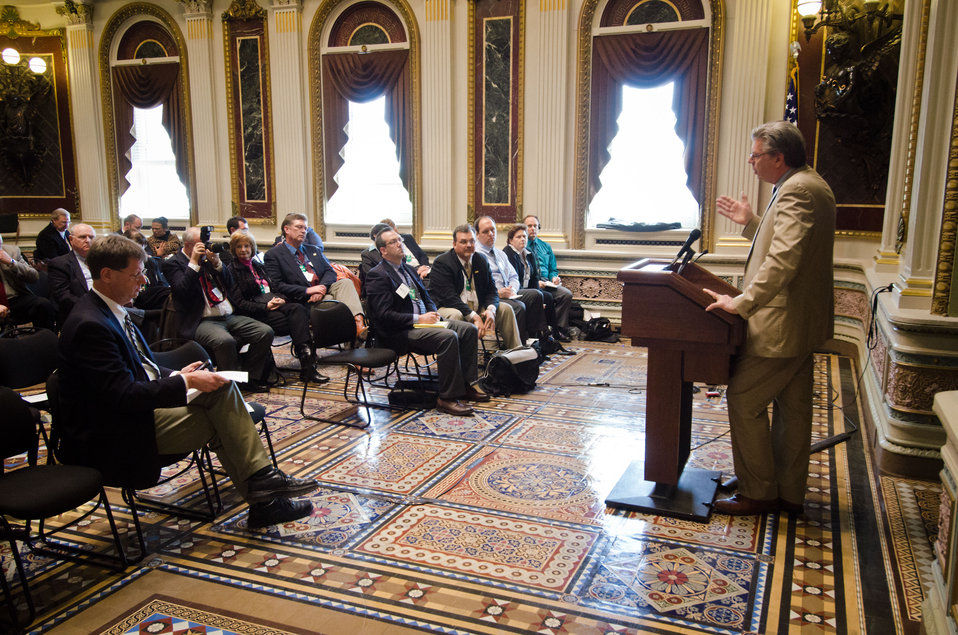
United States Department of Agriculture, Chief Economist Dr. Joseph Glauber discussed the agricultural economic outlook at the spring National Association of Farm Broadcasters (NAFB), “Washington Watch” member retreat in Washington, D.C. This year the meeting was held in the Eisenhower Executive Office Building, Indian Treaty Room Tuesday, April 24, 2012 featuring United Sates Department of Agriculture and Obama Administration officials. This opportunity provides an occasion to highlight efforts to rebuild and revitalize rural America, including efforts for the agricultural community. NAFB is the recognized and trusted source of agricultural and rural lifestyle information for America with approximately 200 members who broadcast via radio in nearly every state in the country.